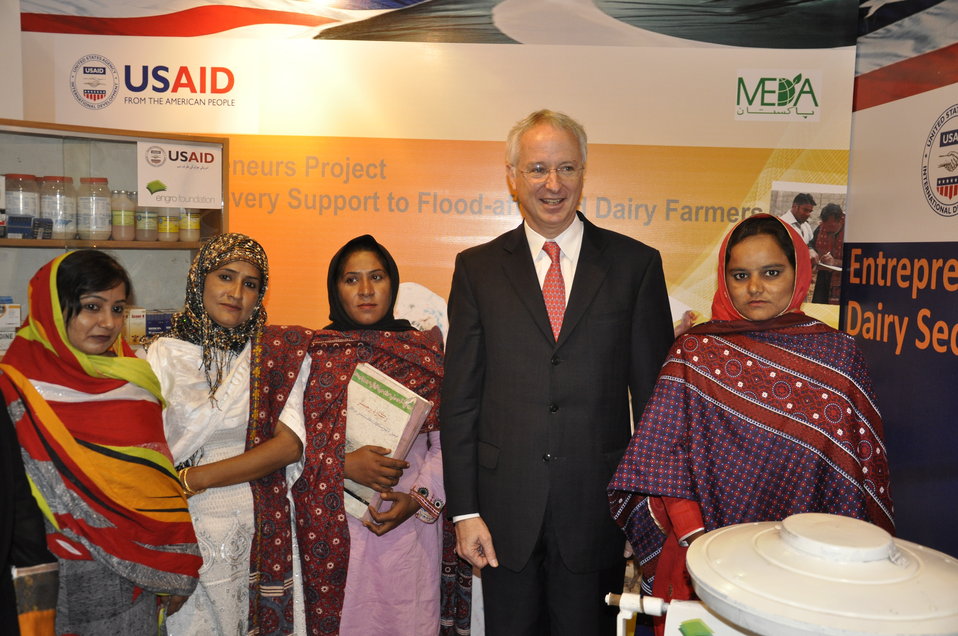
Ambassador Cameron Munter in a group photo with Dairy beneificaries at the Entrepreneurs stall